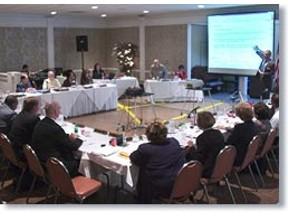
Savannah River Site Citizens Advisory Board (CAB)

The Savannah River Site Citizens Advisory Board (CAB) is composed of 25 individuals from South Carolina and Georgia. The board members are chosen to reflect the cultural diversity of the population affected by SRS, they meet often to discuss ongoing matters at SRS.